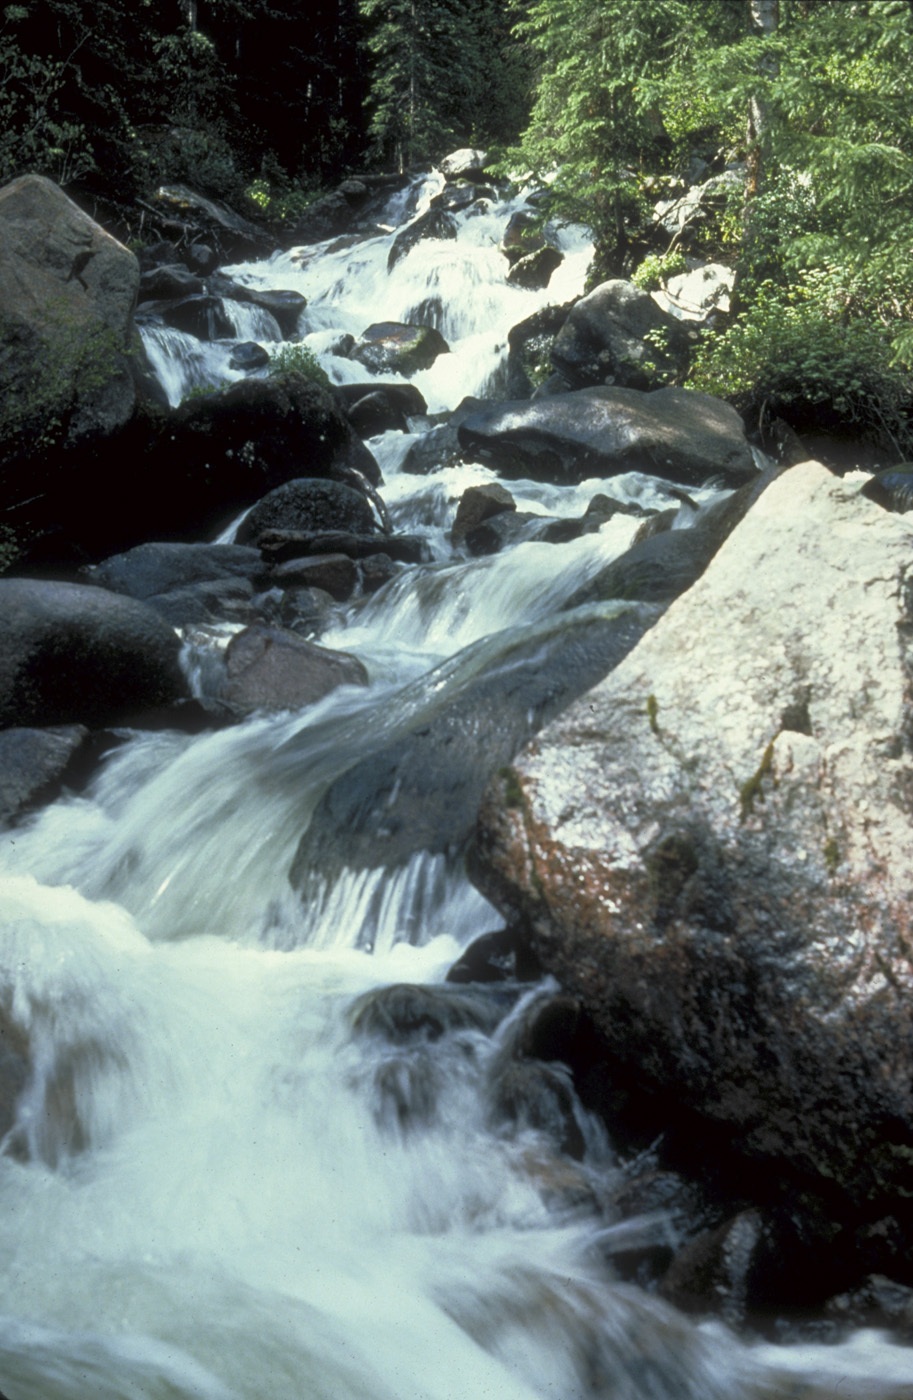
Cataract Creek